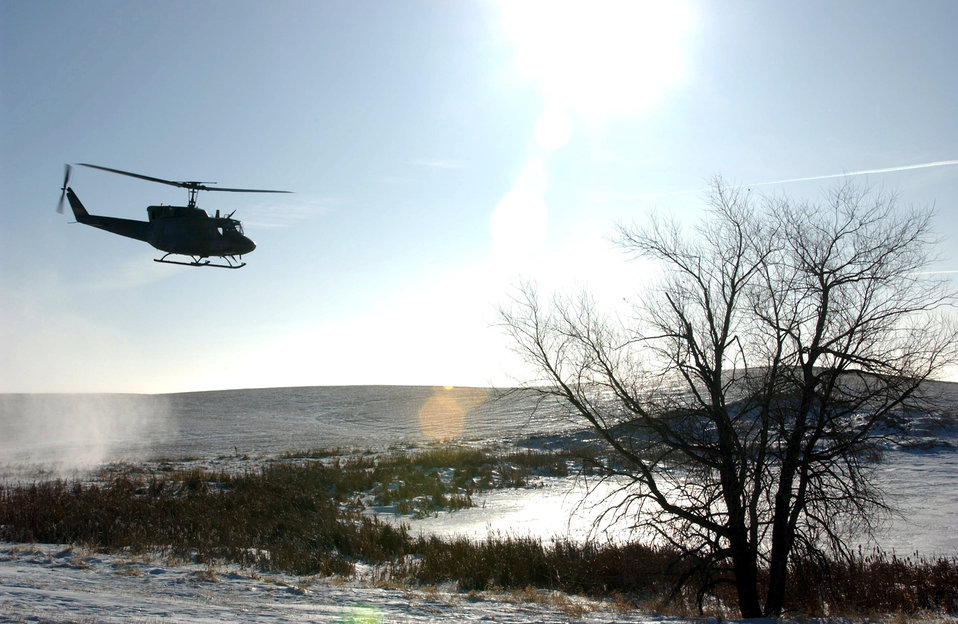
Cold-weather capture

MINOT AIR FORCE BASE, N.D. (AFPN) -- A UH-1N Huey helicopter from the 54th Helicopter Flight takes off after the termination of a recapture exercise Jan. 14 at a missile launch facility near here. The exercise tested the base's ability to handle intruders at the launch facility.